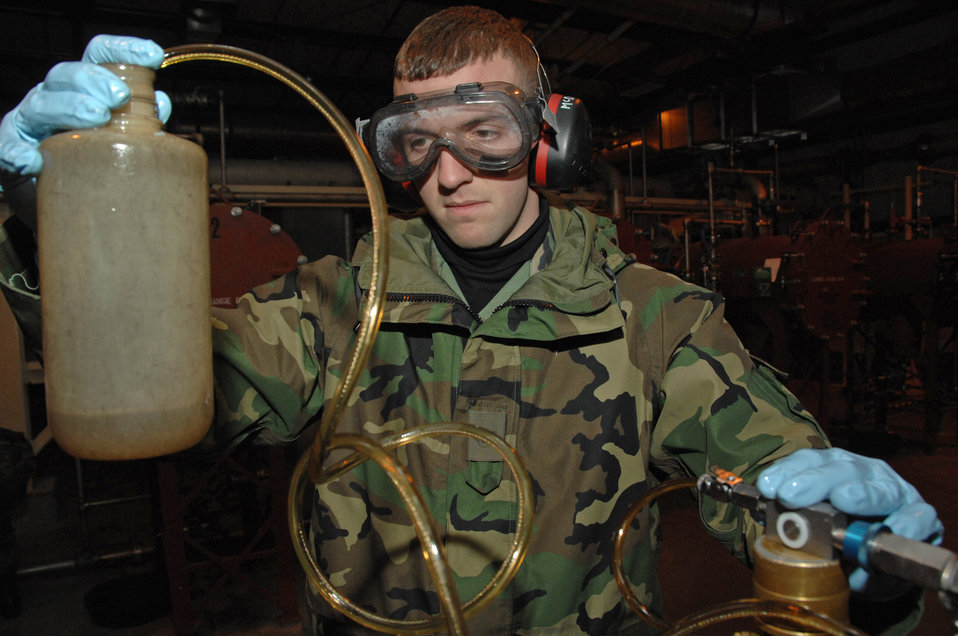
'Fuel Doctor' on duty

Airman 1st Class Sean McDonagh connects an inline sampler which is used to detect free water in fuel Oct. 24 at Eielson Air Force Base, Alaska. Making sure the fuel used by the aircraft at Eielson is always good to go, Airman McDonagh helps assure the process by constantly sampling the fuel lines and the trucks that distribute it to the aircraft. Airman McDonagh is a fuels laboratory technician assigned to the 354th Logistic Readiness Squadron.